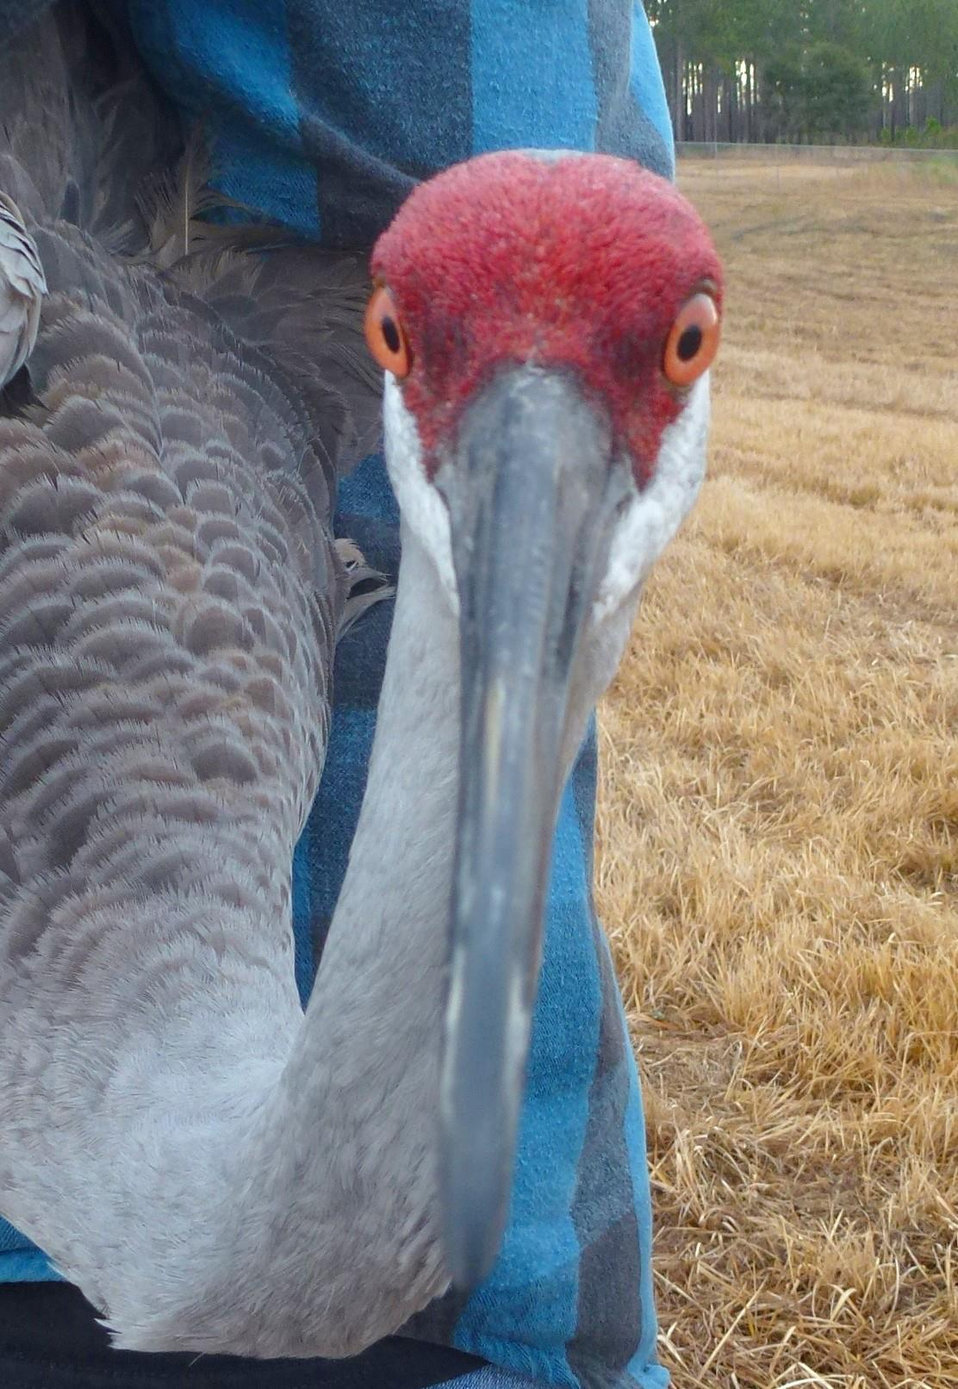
Mississippi sandhill crane

Swamp Girl is the nickname of a Mississippi sandhill crane fledged at the MIssissippi Sandhill Crane Refuge in 2007. Here she is shown getting new leg bands on Jan. 20, 2012.